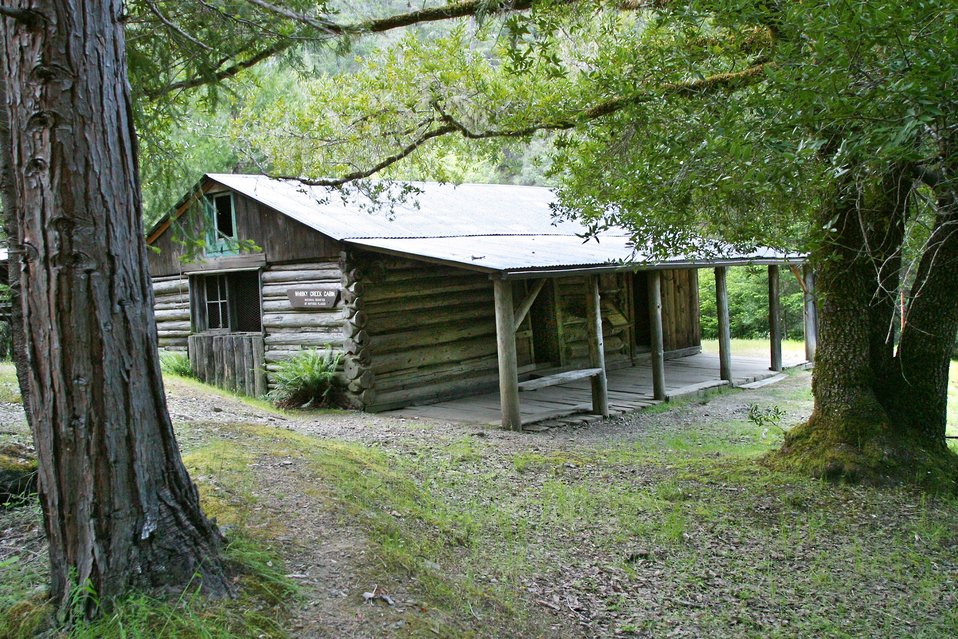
Whisky Creek Cabin along the Wild section of the Rogue River from Grave Creek to Foster Bar. 3100 cfs at Grants Pass and 5300 at Agness.